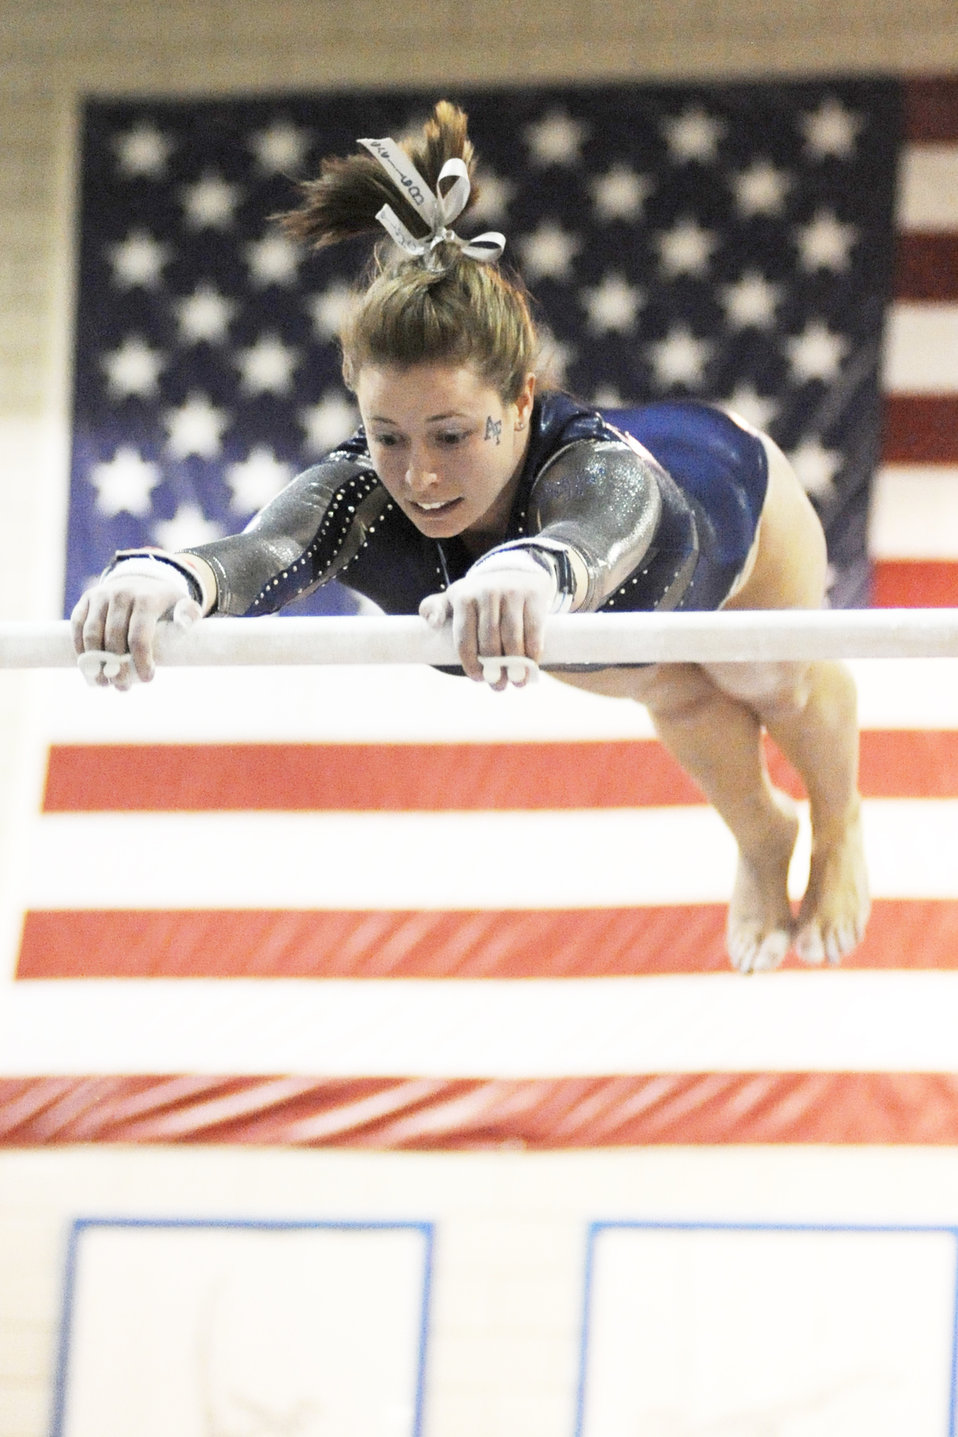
Women gymnasts compete in tri-meet

Academy senior Michelle Denise performs on the uneven bars during the home tri-meet against Southeast Missouri State and Seattle-Pacific in the U.S. Air Force Academy's Cadet Gym Feb. 20, 2010. Air Force placed second in the team competition with a score of 188.00. Southeast Missouri came in first with 194.05 and Seattle Pacific finished with 187.075.